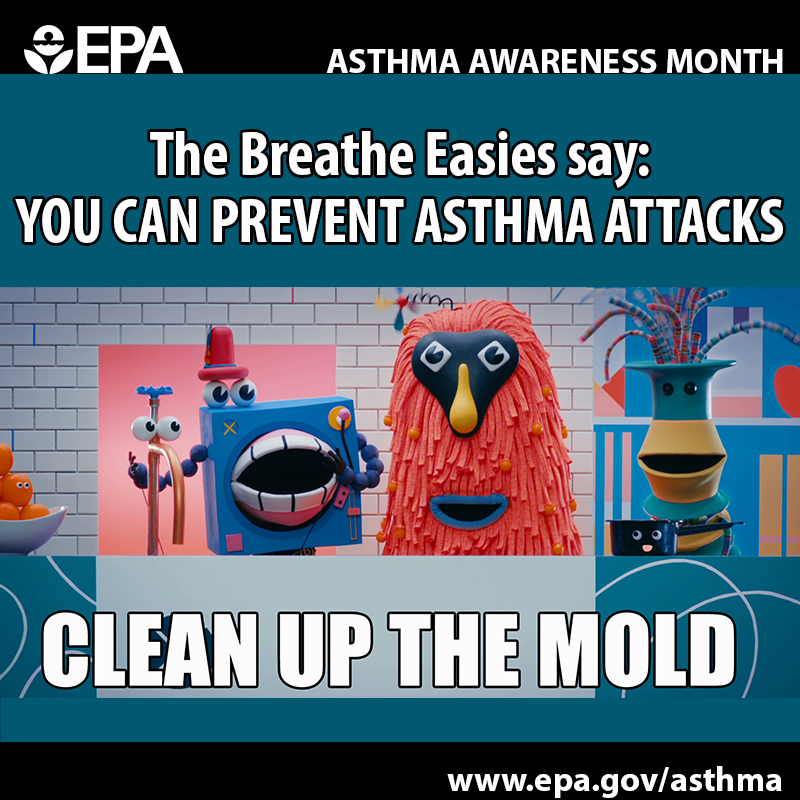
Want to breathe easy? Mold is an #asthma trigger. Clean it up! youtu.be/u92LyXRlMnw